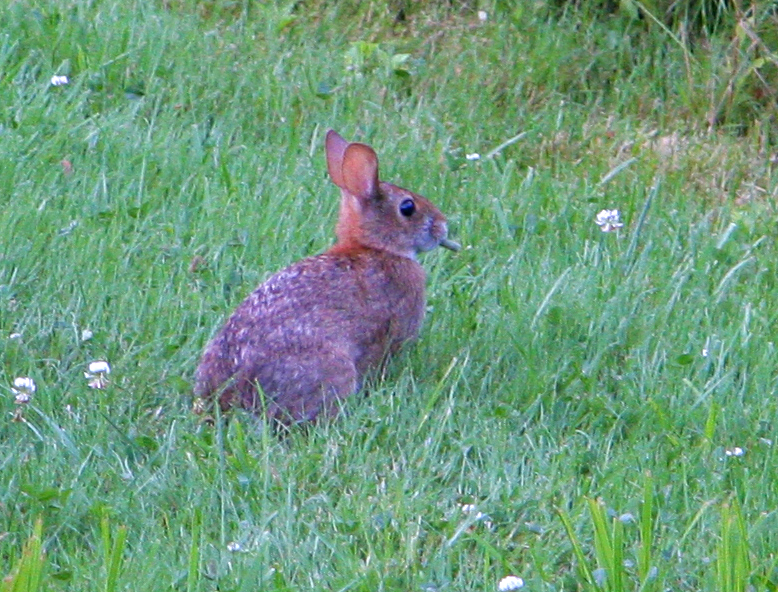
Photo of the Week - New England cottontail

Photo of the Week - 3/31/10

Happy Spring! The New England cottontail is being considered for protection under the Endangered Species Act. This photo was taken in Kittery, Maine.